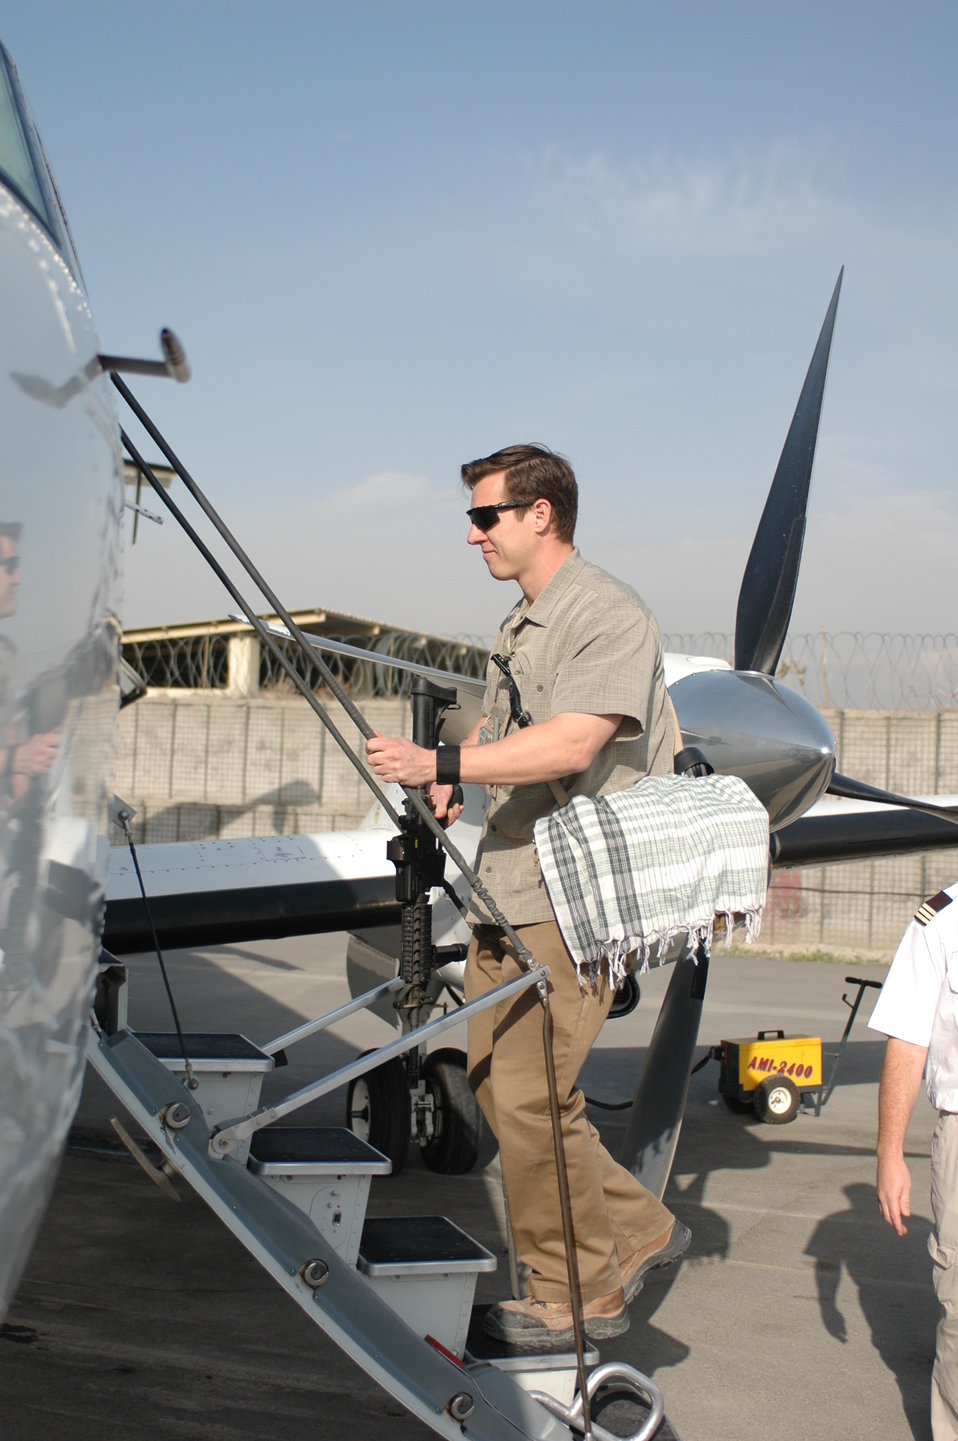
Dr Shah Visits Kandahar April 9, 2010